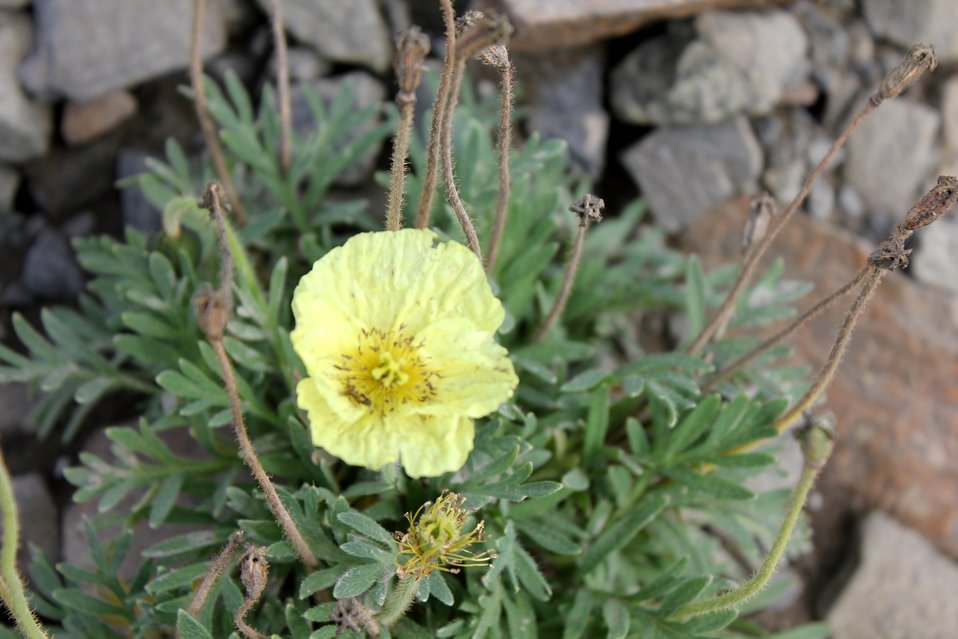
Arctic poppy